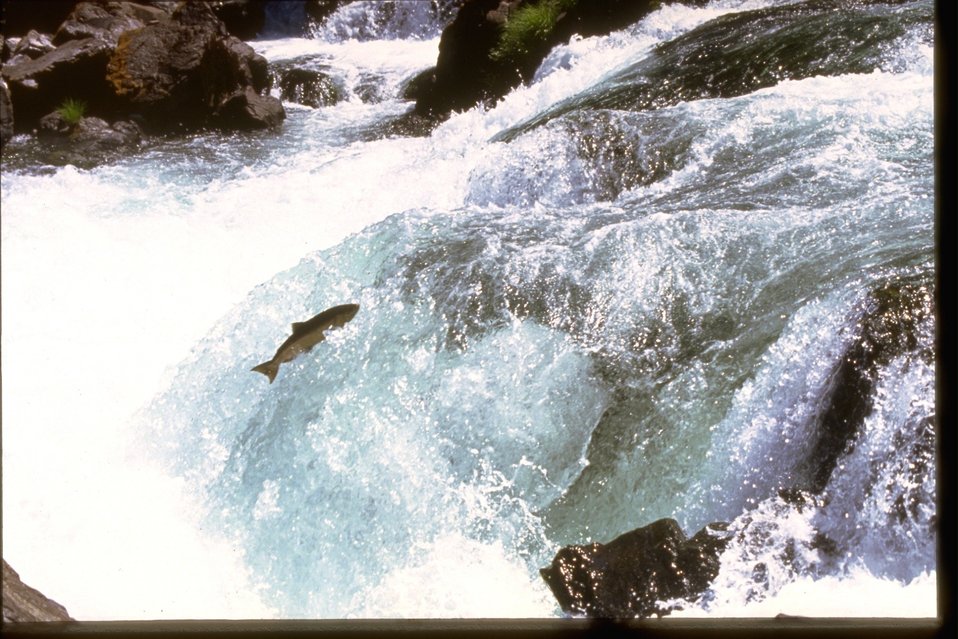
Salmon or Steelhead jumping up falls.